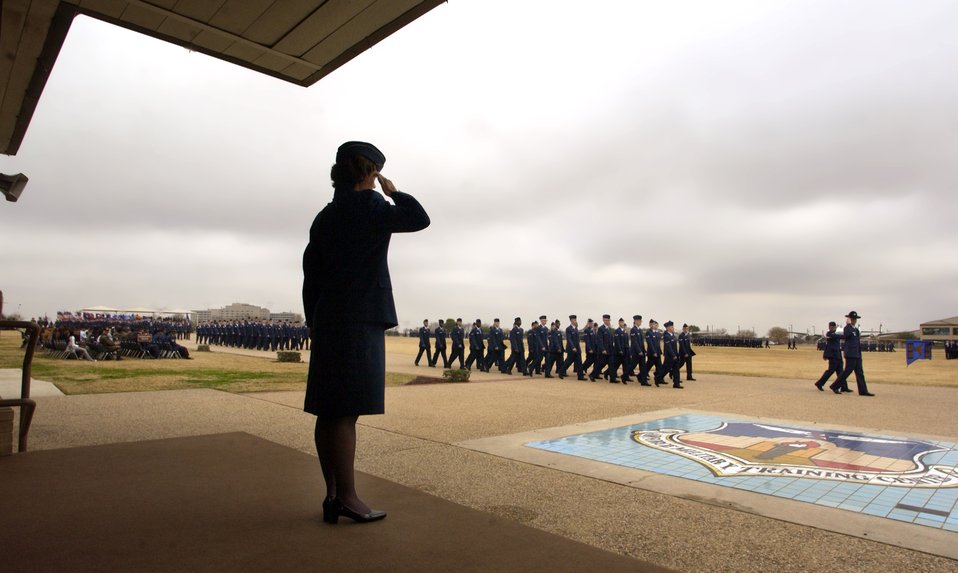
Graduation day

LACKLAND AIR FORCE BASE, Texas (AFPN) -- Col. Gina Grosso reviews 961 of the Air Force's newest Airmen during the last basic military training graduation ceremony for 2005. Each year, nine squadrons work together to train 45,000 active duty, Air National Guard and Air Force Reserve recruits here. Colonel Grosso is the 737th Training Group commander.